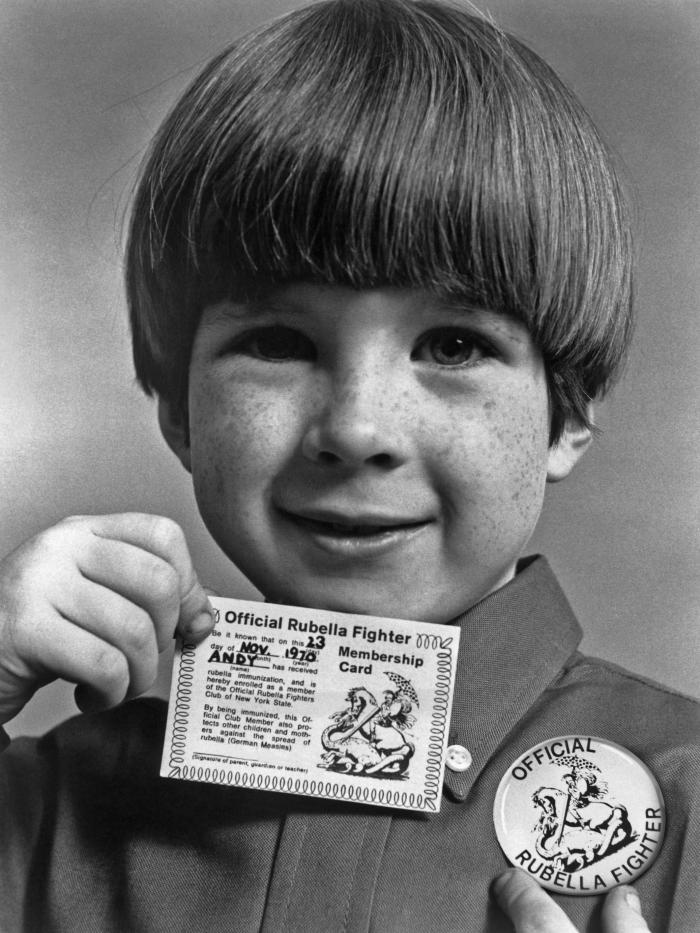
This photograph shows a boy with his 'Official Rubella Fighter Membership Card', and button after being immunized for rubella during the 'rubella umbrella' campaign of the late 1960s, early 1970s.